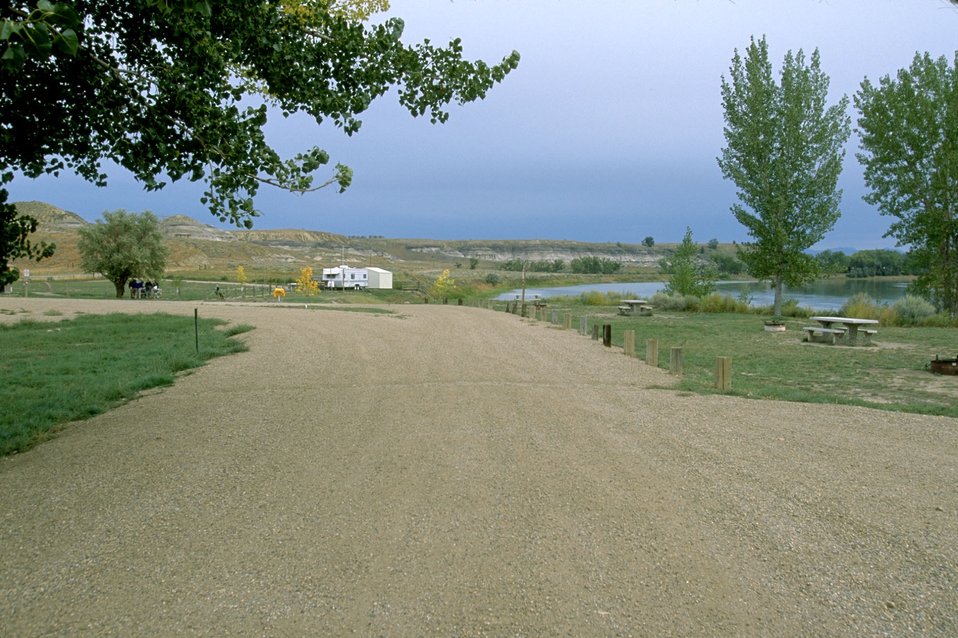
Parking lot at Coal Banks Landing on the Upper Missouri River